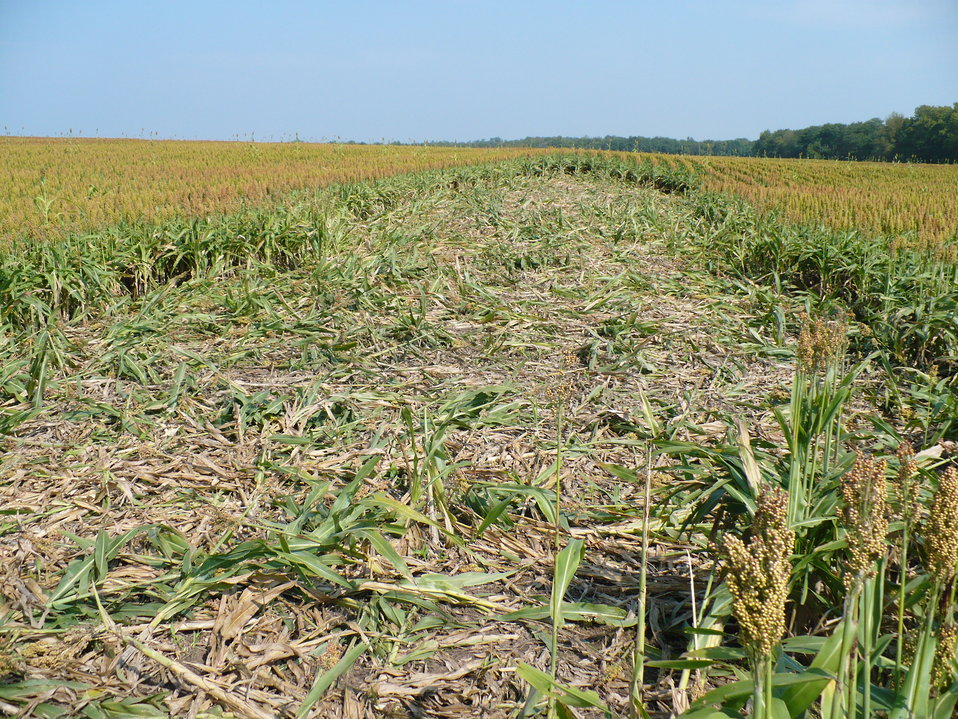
Found in at least 38 states with a population of more than 5 million, feral swine cause approximately $1.5 billion in damages and control costs in the U.S. each year. Eight hundred million of this estimate reflects direct damage to agriculture.